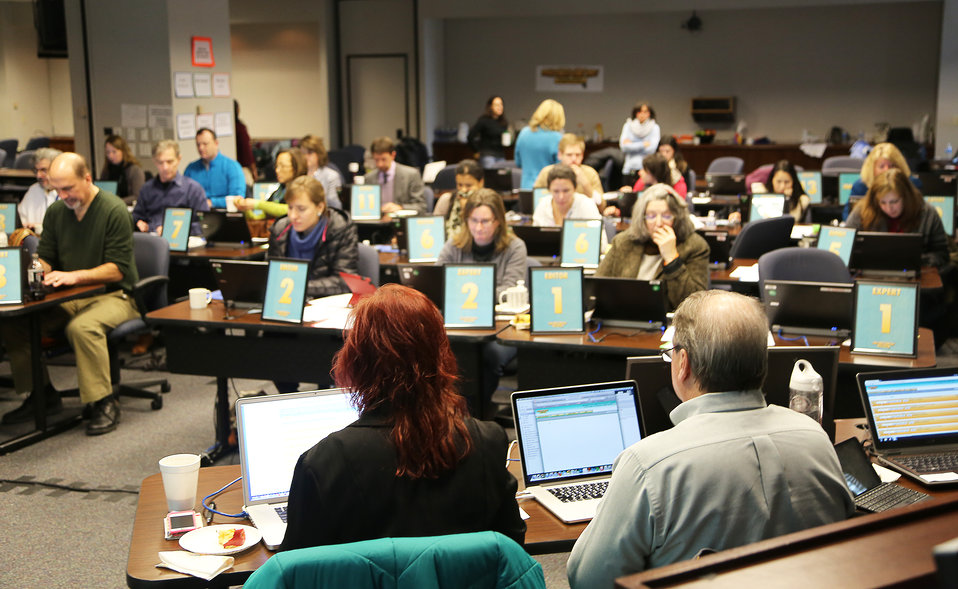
It Takes a Village for Chat Day 2014

Chat Day Event held by the National Institute on Drug Abuse during its National Drug Facts Week Jan. 27-Feb. 2, 2014. Scientists from NIDA and other agencies answered questions about drugs from teens around the world on Jan. 29th in Rockville, Maryland.